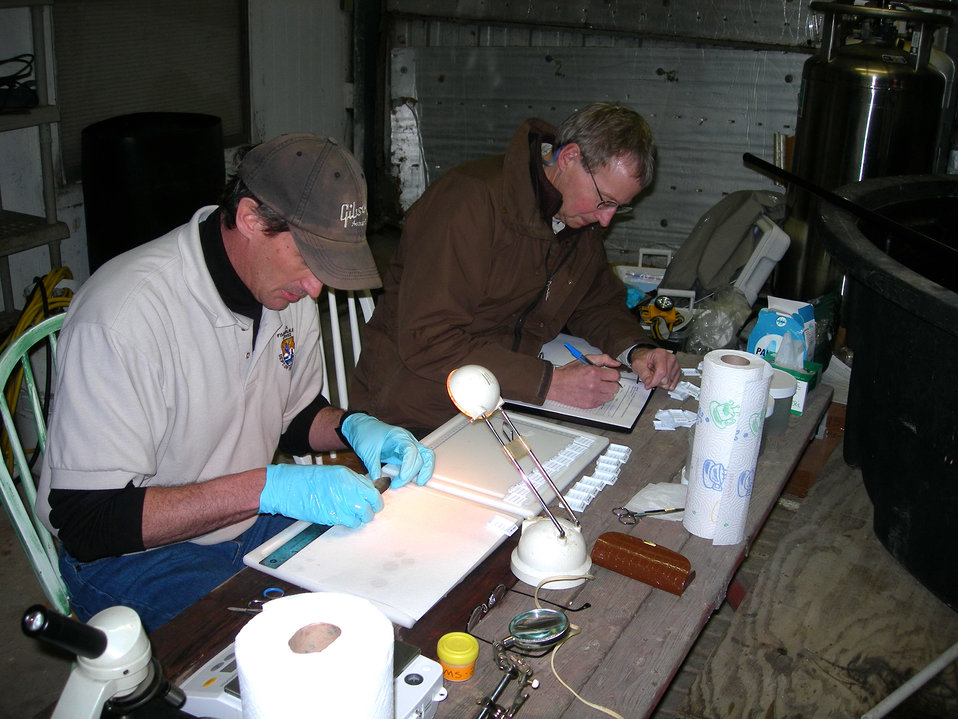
Jim Bowker and Dan Carty taking fish measurements and collecting samples for histology during Chloramine-T field efficacy studies.

Rachel Carson Award for Scientific Excellence (Group) – 2013